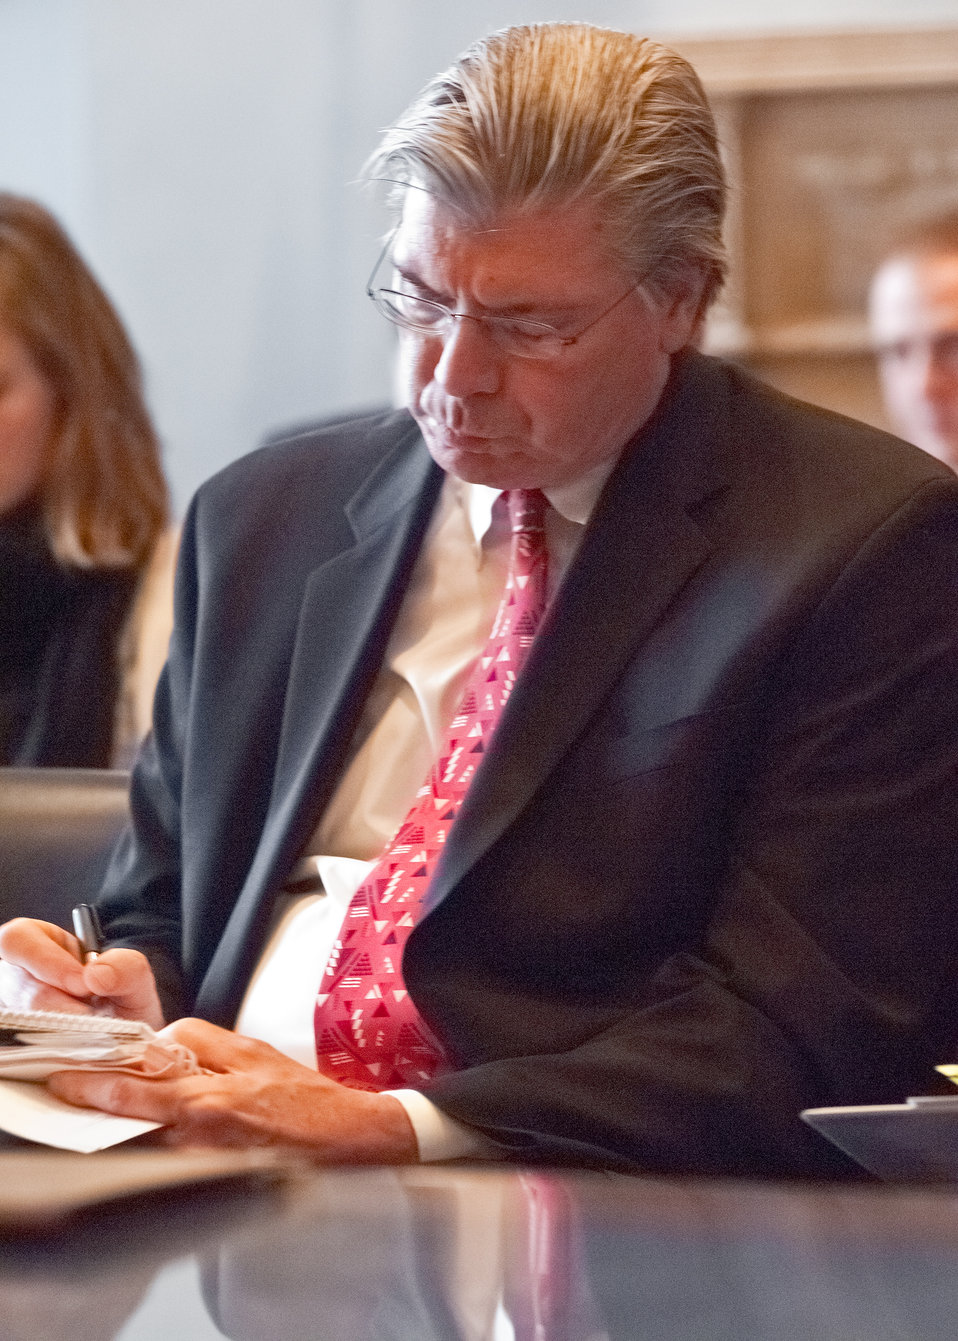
Dr. Joe Glauber, Chief Economist takes notes during a United States Department of Agriculture budget hearing on the “State of the Ag Economy” at a House Agriculture Committee hearing in the Longworth House Office Building in Washington, D.C., Thursday, February 17, 2011.